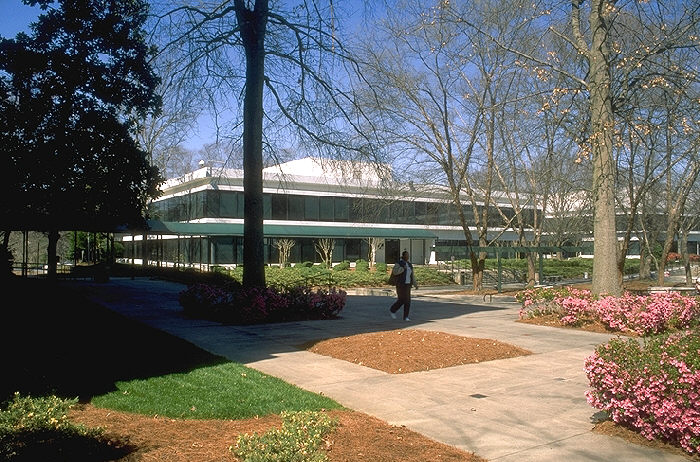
Building 11, Corporate Square, CDC.